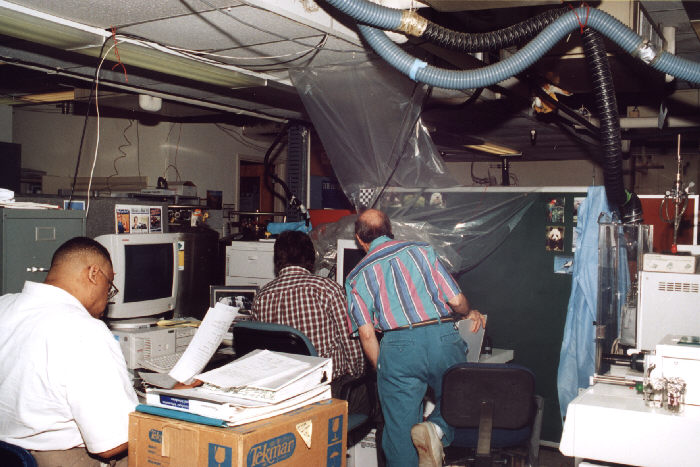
Lab Scene, Building 17, Chamblee, CDC